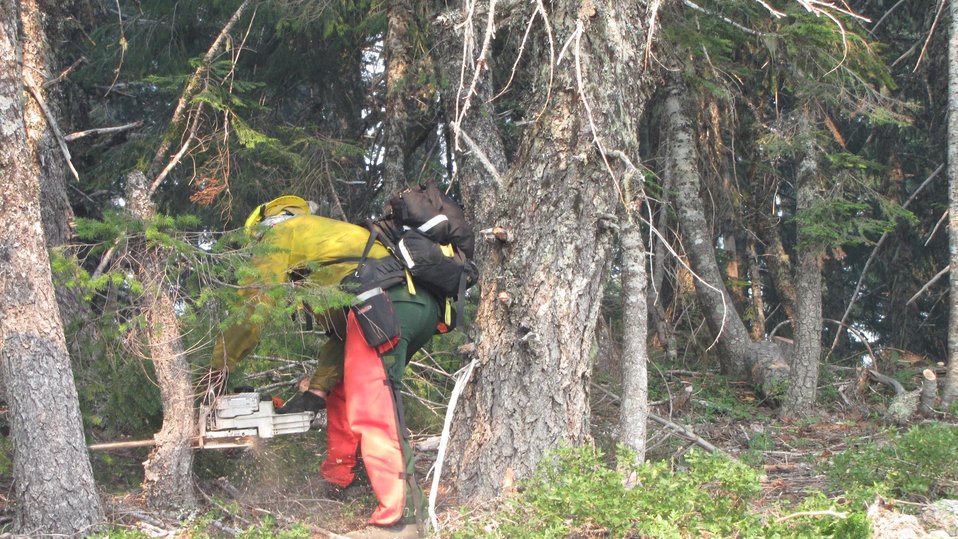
Fire crew works to clear area to prevent spread of the Big Windy Complex Fires. The Big Windy Complex Fires consists of three fires: The Big Windy Fire, Calvert Peak Fire, and Jenny Fire (formerly the Windy 16 Fire) near Grants Pass, OR. The fires began on Jul. 26, 2013 by lighting have consumed approximately 7, 499 acres.